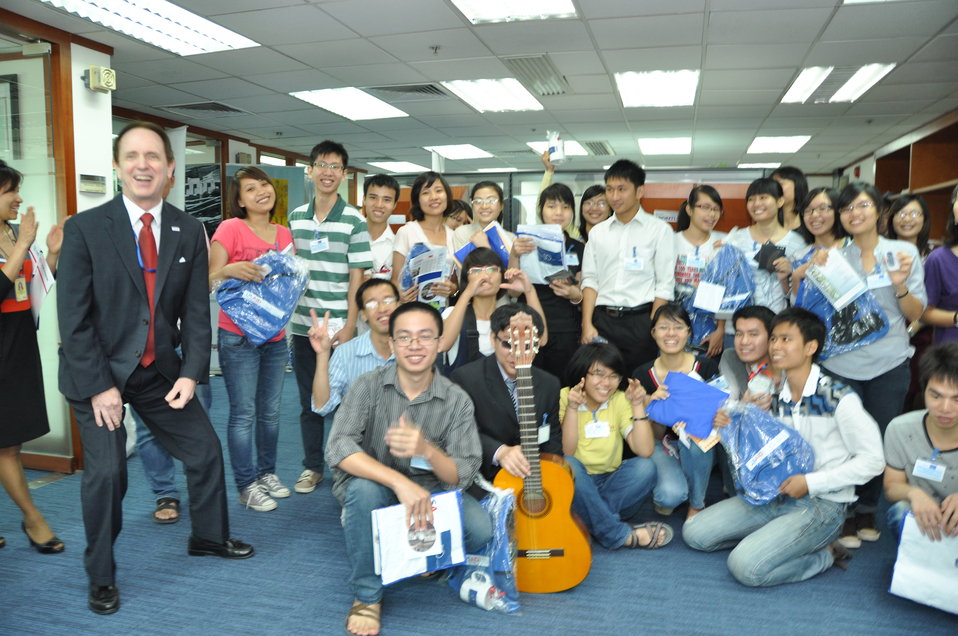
USAID Vietnam Open House, November 3, 2011